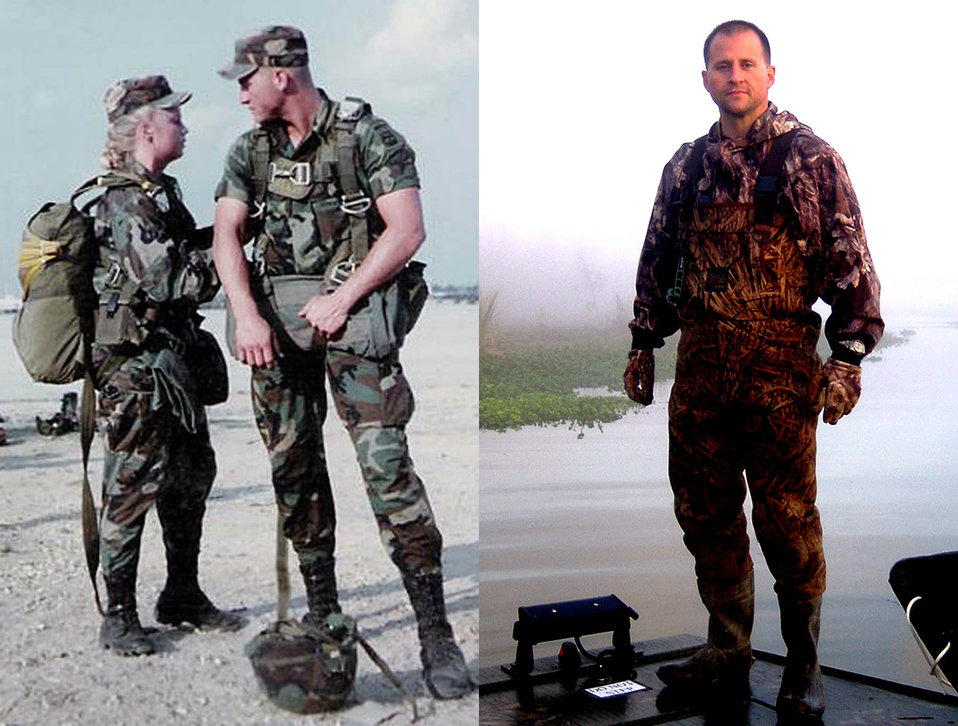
John Rawls.
John Rawls entered the Alabama Army National Guard in November 1986 at the age of 17, during his senior year in high school. He subsequently entered active service with the U.S. Army in January 1989. Rawls was assigned to “America’s Guard of Honor,” the 82nd Airborne Division at Fort Bragg, NC. In 1991, he deployed to Saudi Arabia and Iraq during Operation Desert Shield and Operation Desert Storm. Shortly after his return to the U.S., he became a special duty investigator with the U.S. Army Criminal Investigations Command (CID), and served as a special agent and the detachment sergeant of the Carlisle Barracks Resident Agency, at the U.S. Army War College, Carlisle, PA. He left the Army as a Staff Sergeant (E6) in November 1997..
.
While serving in the U.S. Army, Rawls received numerous awards and honors including the Meritorious Service Medal; three Army Achievement Awards; National Defense Service Medal; Southwest Asia Service Medal with two bronze service stars for U.S. Army Operations in Saudi Arabia and Iraq; Kuwait Liberation Medal; and Saudi Arabia Kuwait Liberation Medal..
.
After three and half years as a Conservation Enforcement Officer with the Alabama Department of Conservation and Natural Resources, Rawls reentered government service in July 2001 as a special agent with the U.S. Fish and Wildlife Service, Office of Law Enforcement in Miami, FL. He has also filled assignments in Savannah, GA, Fairbanks, AK, Grenada, MS, and he is currently assigned to Millbrook, AL. He has received numerous star awards for achievement in physical fitness and job performance while in civilian service. .
.
Sherena Rawls – Wife of John Rawls.
Sherena Rawls followed her brother and entered the U.S. Army in 1989 and served with the 4th Psychological Operations Group (Airborne) at Fort Bragg, NC. Rawls left the Army as a Specialist (E4) in 1992 to become a stay-at-home mom. Since then, Rawls has worked part-time and volunteered in many capacities. She is currently a full time wife and mom, and runs a business as a Zumba Fitness Instructor. Rawls also volunteers several hours a week in church assignments, as an Assistant Scout Master with Boy Scout Troop 605 of Wetumpka, AL, and as an active member of the Wetumpka Quarterback Club and Wetumpka Wrestling Boosters.